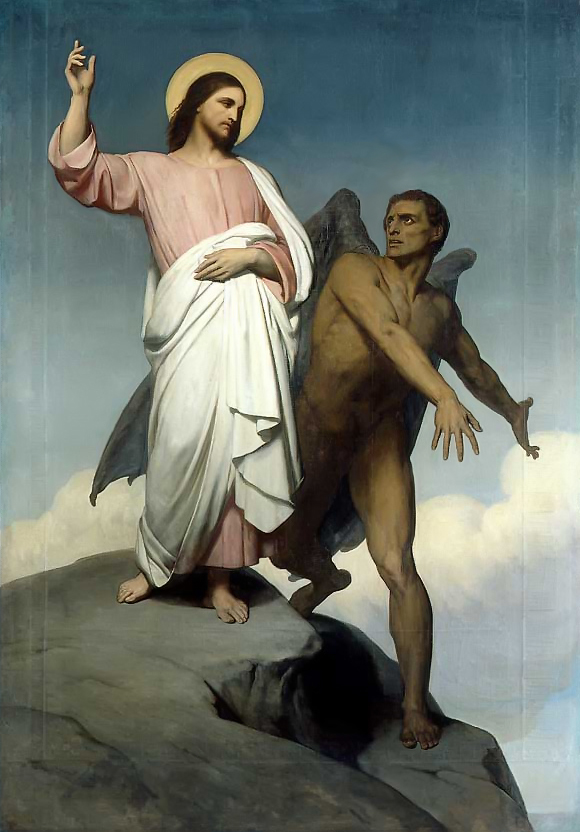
Ary Scheffer - The Temptation of Christ (1854)